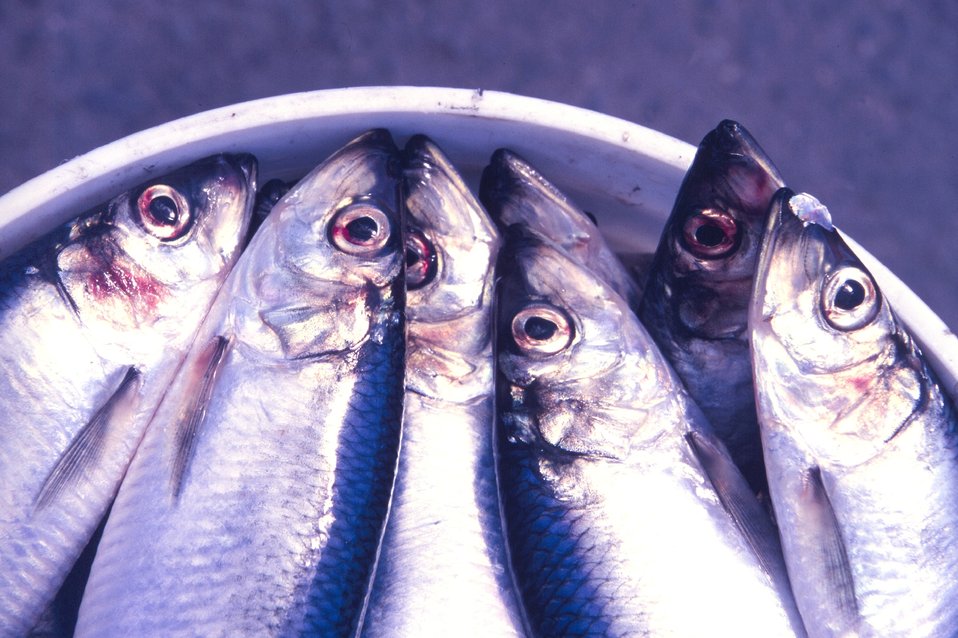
Once seriously overfished, the rebuilt Atlantic herring resource today offers new opportunities to fishermen.